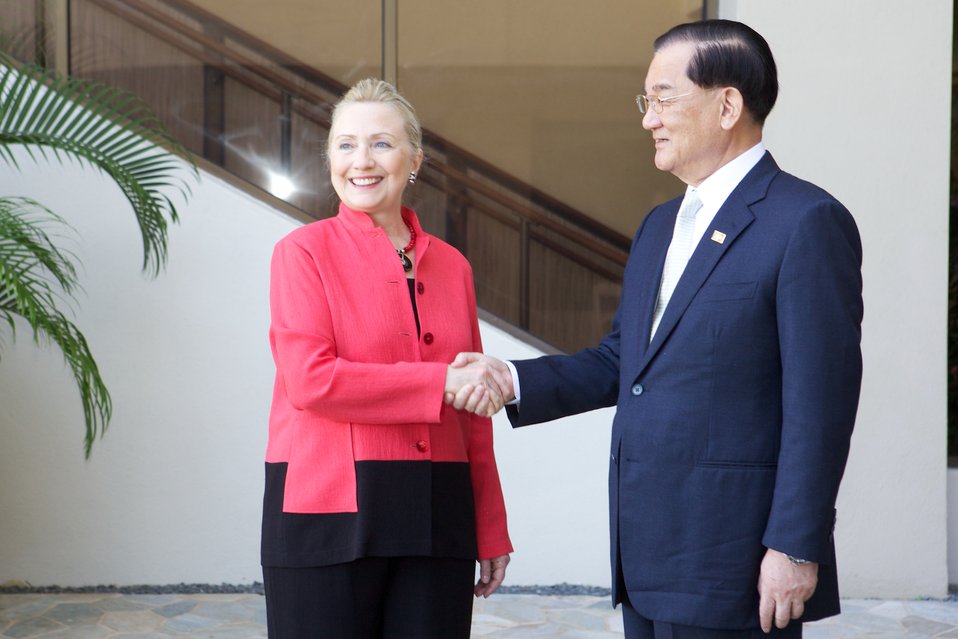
Secretary Clinton Meets With Leader's Representative of Chinese Taipai

U.S. Secretary of State Hillary Rodham Clinton meets with Leader's Representative of Chinese Taipai Dr. Lien Chan on the sidelines of APEC in Honolulu, Hawaii, on November 12, 2011.